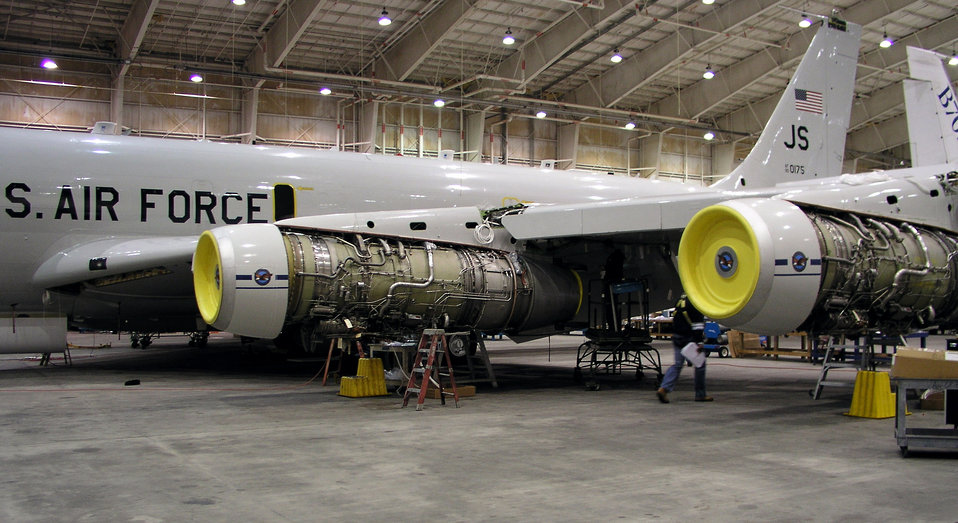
E-8C's new engine program takes off

A newly-installed propulsion pod system, pictured here on the E-8C Joint Surveillance Target Attack Radar System T-3 test aircraft at a prime contractor facility in Melbourne, Fla., is at the center of a major engine upgrade effort currently under way. Installation of the new engines on the aircraft is reaching its final stages, with the T-3's first flight scheduled for Dec. 17.